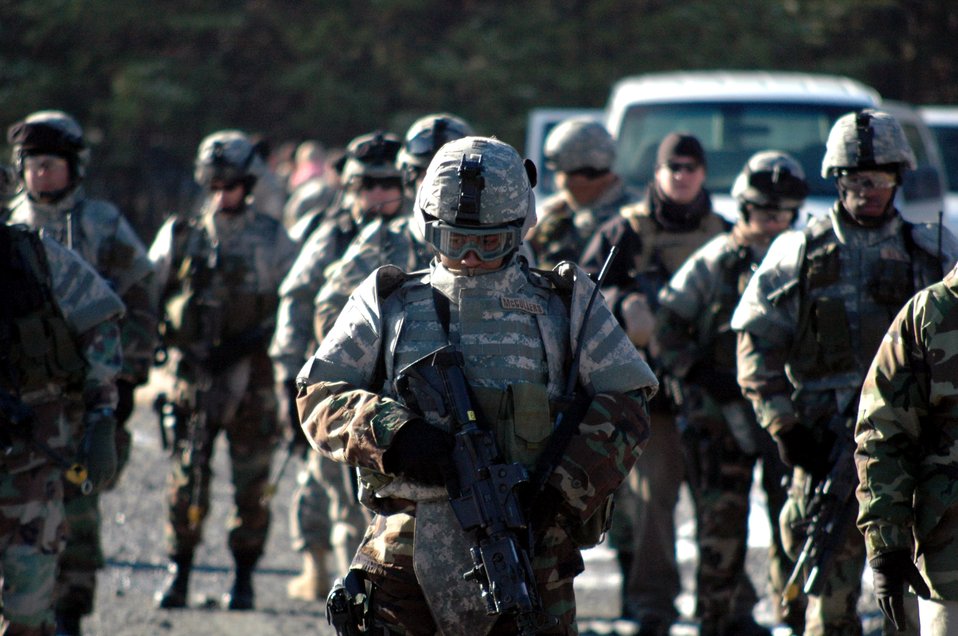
Air Force tactical security element training

Students in the tactical security element training course practice a dismounted patrol during training on a range on Fort Dix, N.J. The course, held in early December, was the first of its kind by the U.S. Air Force Expeditionary Center at Fort Dix. Taught by instructors from the Air Force Office of Special Investigations and a security forces cadre from the center's 421st Combat Training Squadron, the training is designed to prepare security forces for